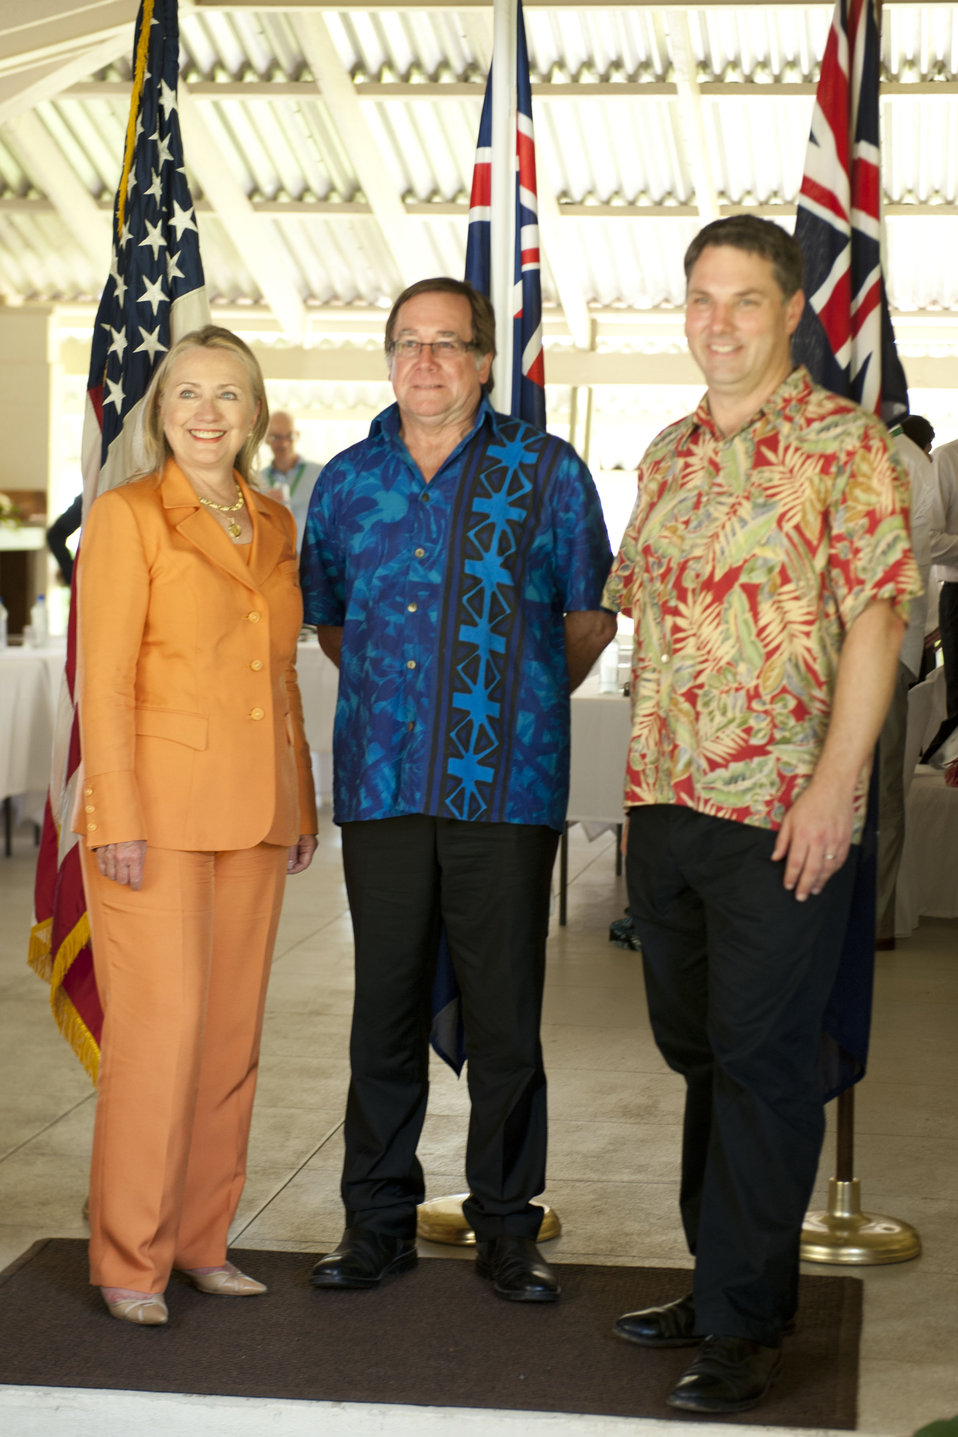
Australia, New Zealand, and U.S. Trilateral Meeting During Pacific Islands Forum

U.S. Secretary of State Hillary Rodham Clinton poses for a photograph with New Zealand Foreign Minister Murray McCully and Australian Parliamentary Secretary Richard Marles at the Pacific Islands Forum in Rarotonga, Cook Islands, August 31, 2012.